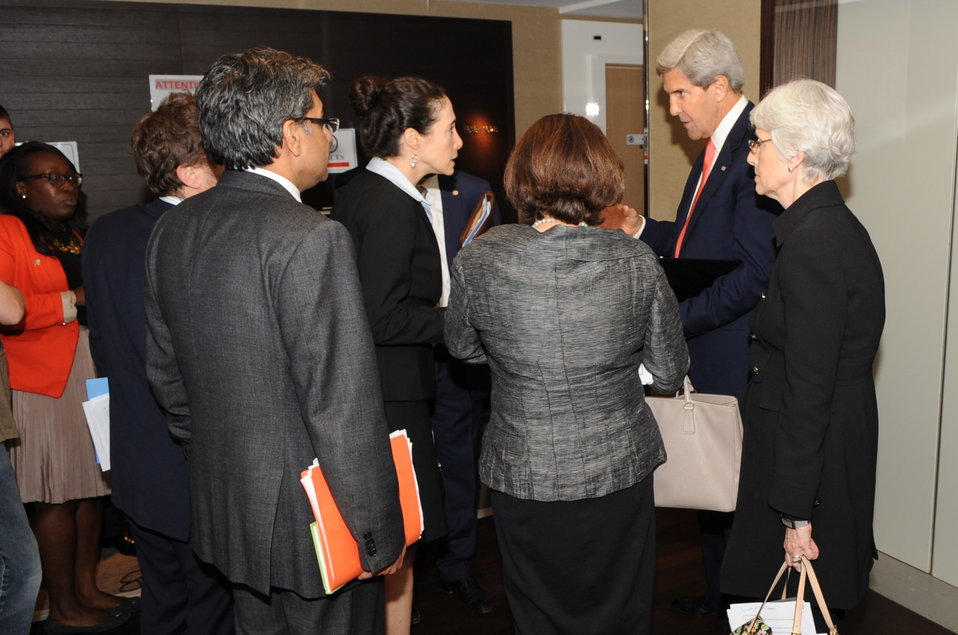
Secretary Kerry Huddles With Staff to Discuss Syrian Negotiations

11:59 p.m., September 13, 2013 - U.S. Secretary of State huddles with his staff following a late-night negotiating session with their Russian counterparts over the elimination of Syrian chemical weapons.